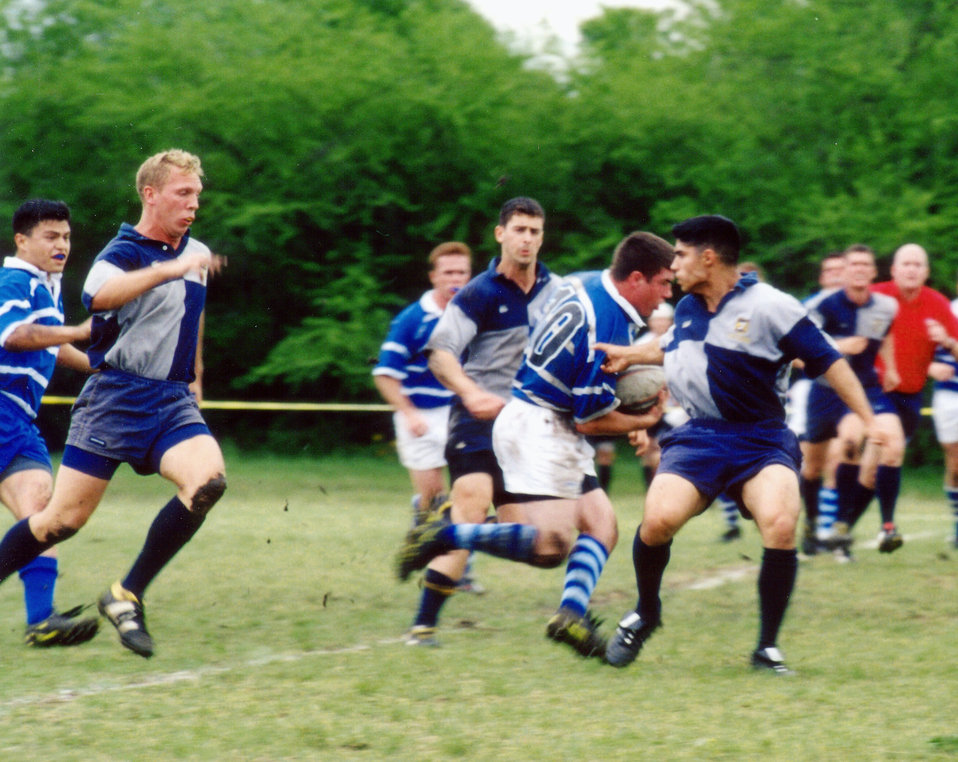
Air Force edges Navy rugby team

SAN ANTONIO -- Rugby players from the U.S. Air Force Academy and the U.S. Naval Academy battle it out during the Alamo City Fiesta Rugby Tournament here April 24. The Air Force won the Commandant's Cup Trophy after successfully kicking two of three field goals in an overtime